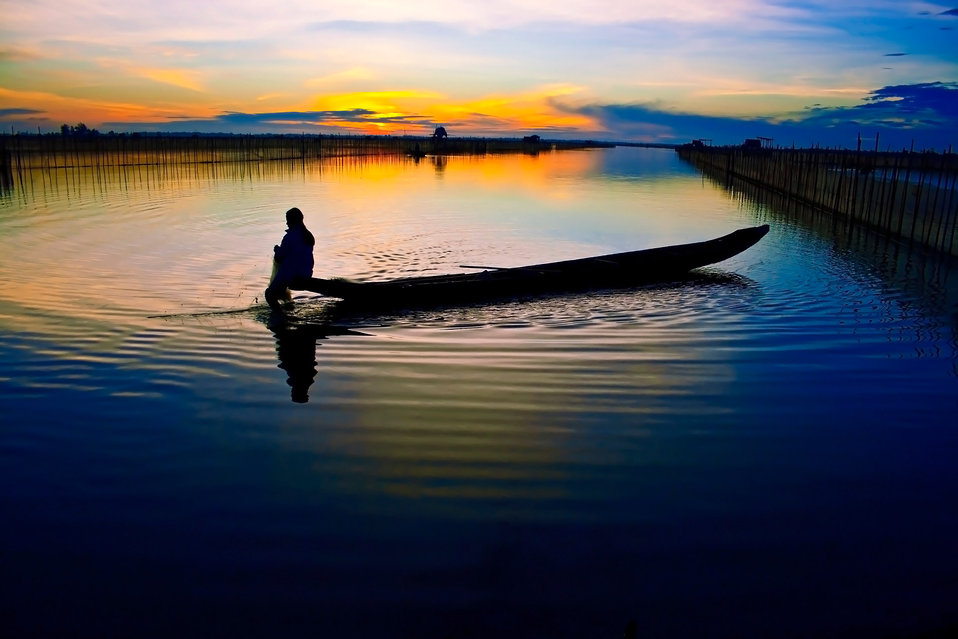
5:19am

A woman fishing at chuon lagoon in dawn..